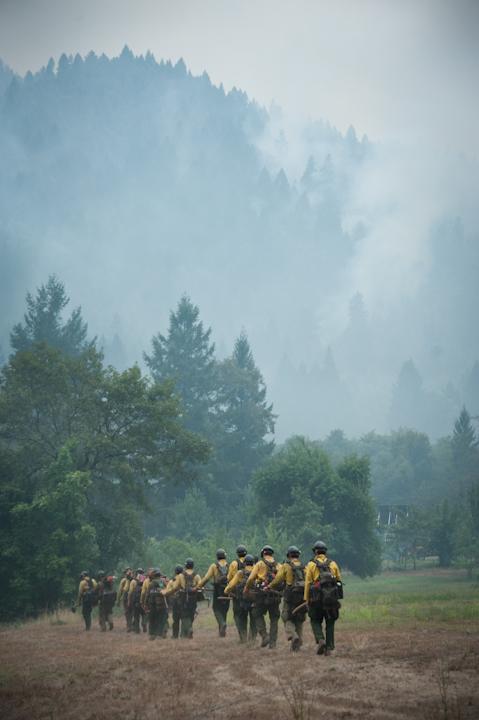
The Ukonom Hotshots hike single file toward the Butler Flat area of the Orleans Fire. The Orleans Complex Fire in the Six Rivers National Forest near New Orleans, CA began on Jul. 29, 2013 is under investigation. The fire has consumed approximately 10,847 acres and is 20% contained.